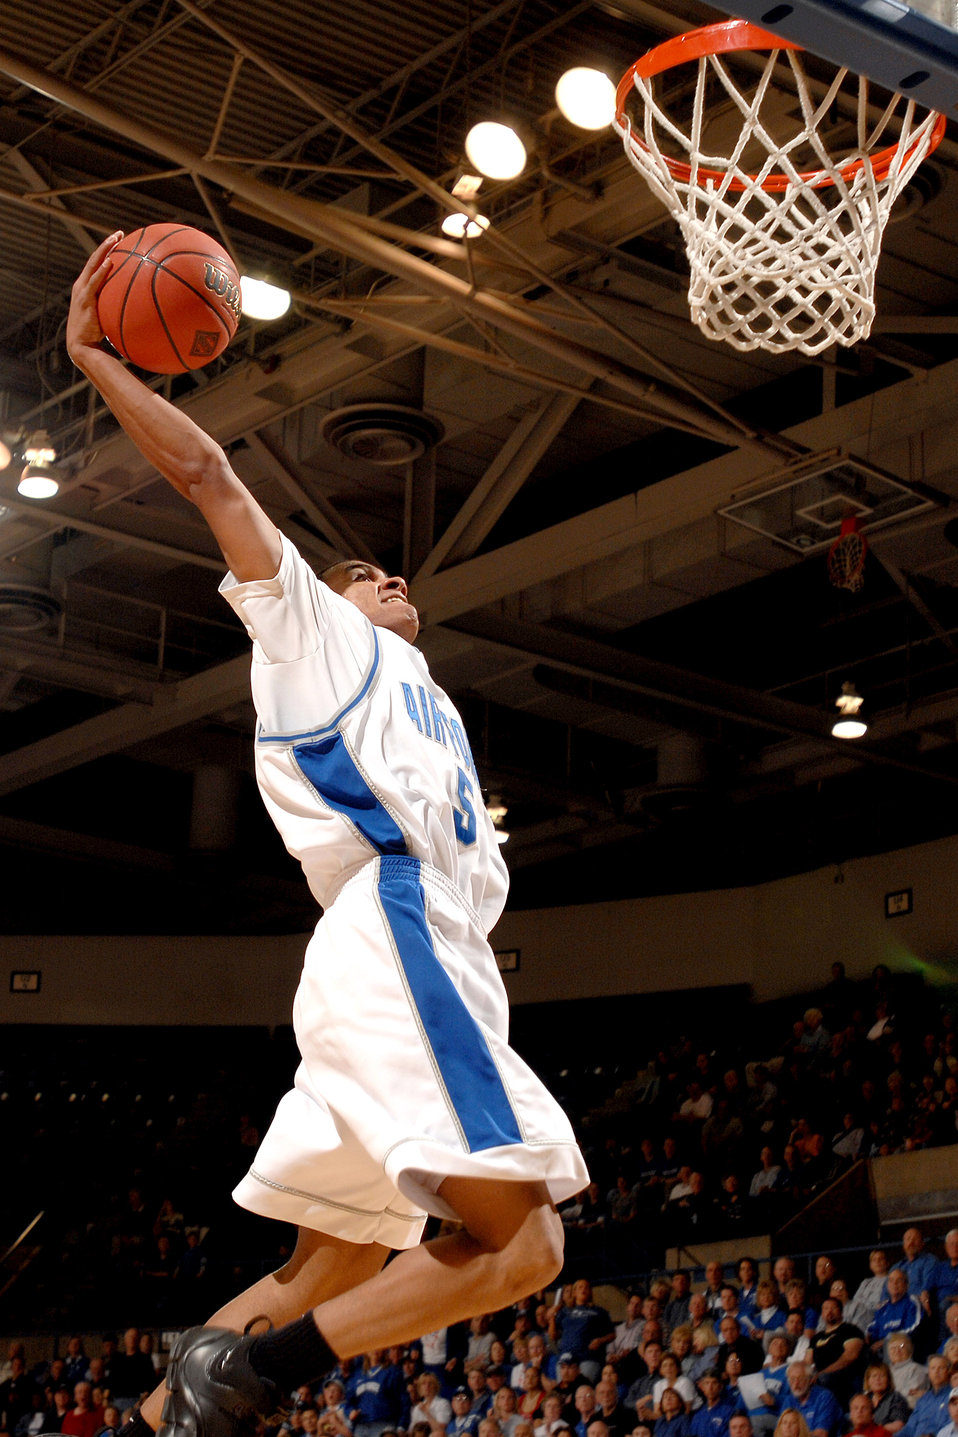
Falcons fly high in NIT debut

Air Force guard Matt McCraw gives new meaning to air power as he goes airborne for a slam dunk against Austin Peay at the Air Force Academy's Clune Arena March 14. By defeating Austin Peay 75-51 in the first round of the National Invitation Tournament, Air Force has its first post-season win in school history.